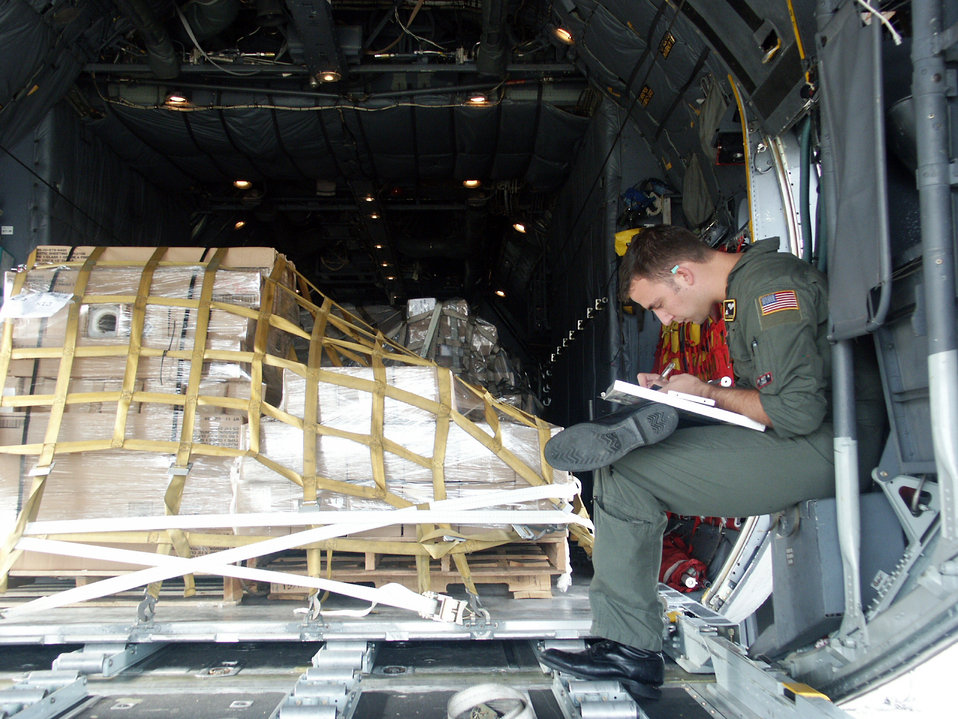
Earthquake relief sent to Niigata

MISAWA AIR BASE, Japan -- Senior Airman Jon Paszkot logs information for a cargo pallet containing earthquake relief supplies Oct. 28. Officials from the 35th Fighter Wing here and the 374th Airlift Wing at Yokota Air Base, Japan, provided 6,000 pounds of plastic sheeting as part of a humanitarian relief mission for victims of the recent earthquake at Niigata, Japan. The plastic sheeting will be used to construct shelters. Airman Paszkot is a C-130 Hercules loadmaster assigned to the 374th AW.